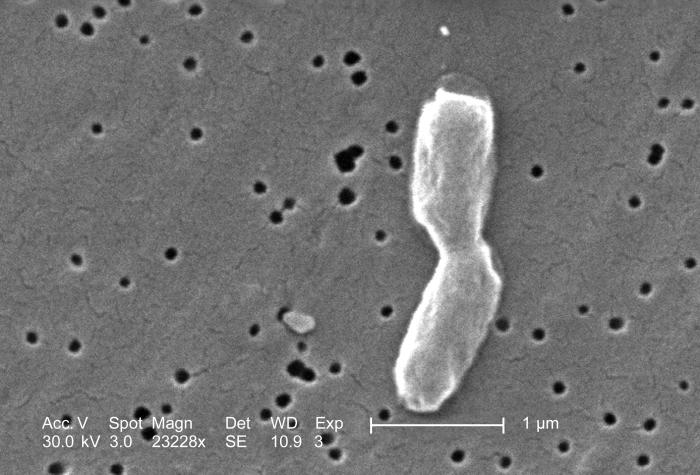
This scanning electron micrograph (SEM) depicts two highly magnified rod-shaped, motile, Gram-negative Salmonella infantis bacteria, which are attached; Magnification 23228x.